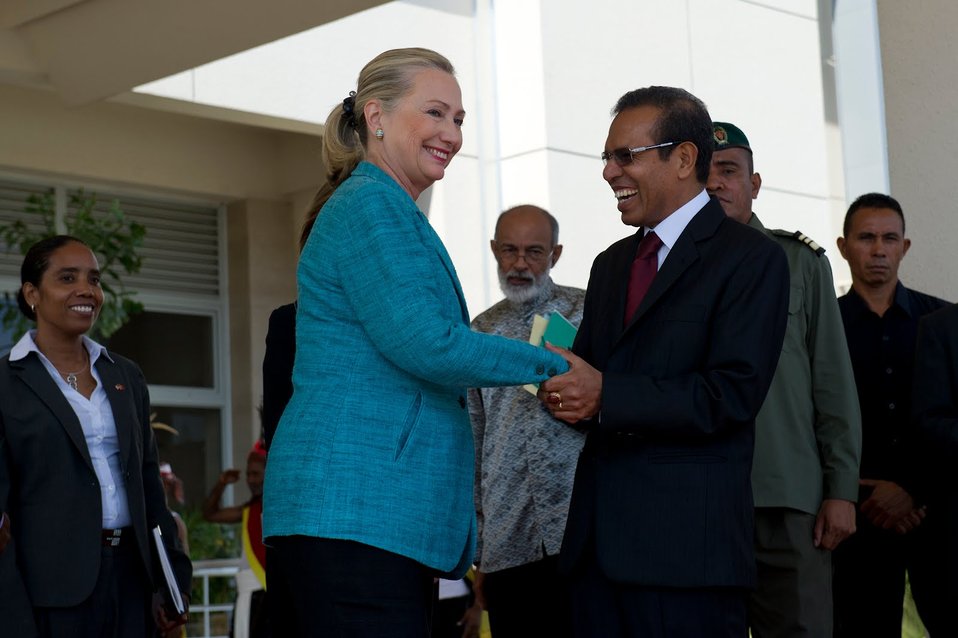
Secretary Clinton Shakes Hands With Timor-Leste’s President Ruak

U.S. Secretary of State Hillary Clinton thanks Timor-Leste’s President Taur Matan Ruak after their meeting in Dili, Timor-Leste, September 6, 2012. This year marks the 10th anniversary of Timorese Independence.